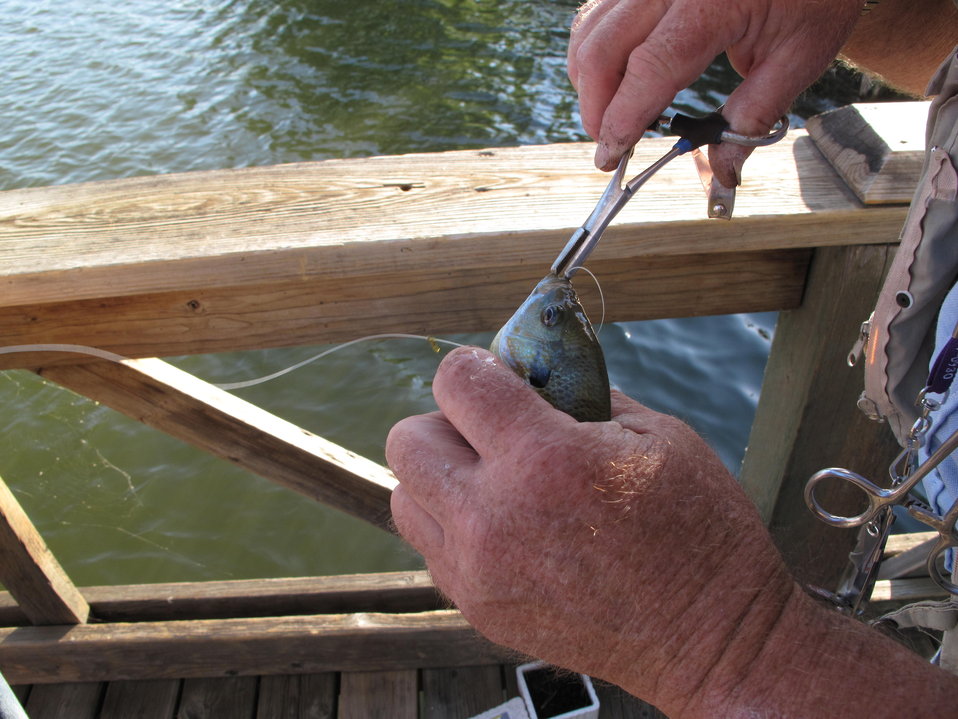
Fishing trip at the Rocky Mountain Arsenal

USFWS volunteer teaching (the parents) how to remove a hook once the fish has swallowed it.